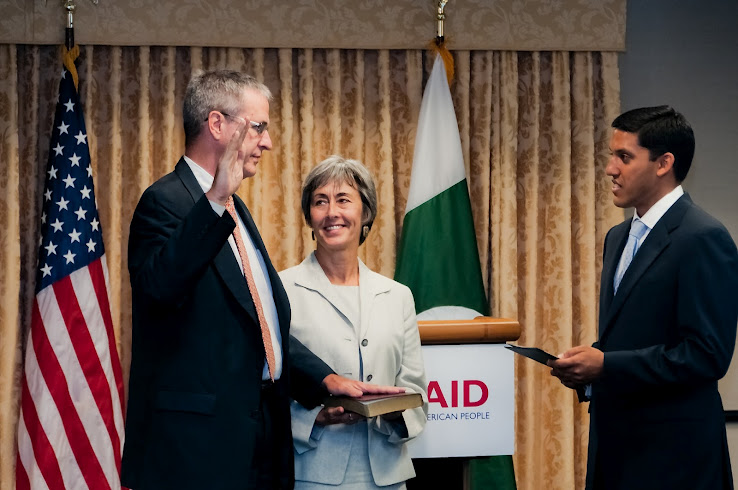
Jonathan Conly

WASHINGTON, D.C. – This week, Jonathan Conly was sworn in as the new U.S. Agency for International Development (USAID) Country Director for Pakistan. USAID Administrator Dr. Rajiv Shah presided over the ceremony and administered the oath in the presence of Mr. Conly’s family, friends, and colleagues, as well as members of the Pakistani-American community and the Pakistan Embassy’s Deputy Chief of Mission, Dr. Asad Majeed Khan.